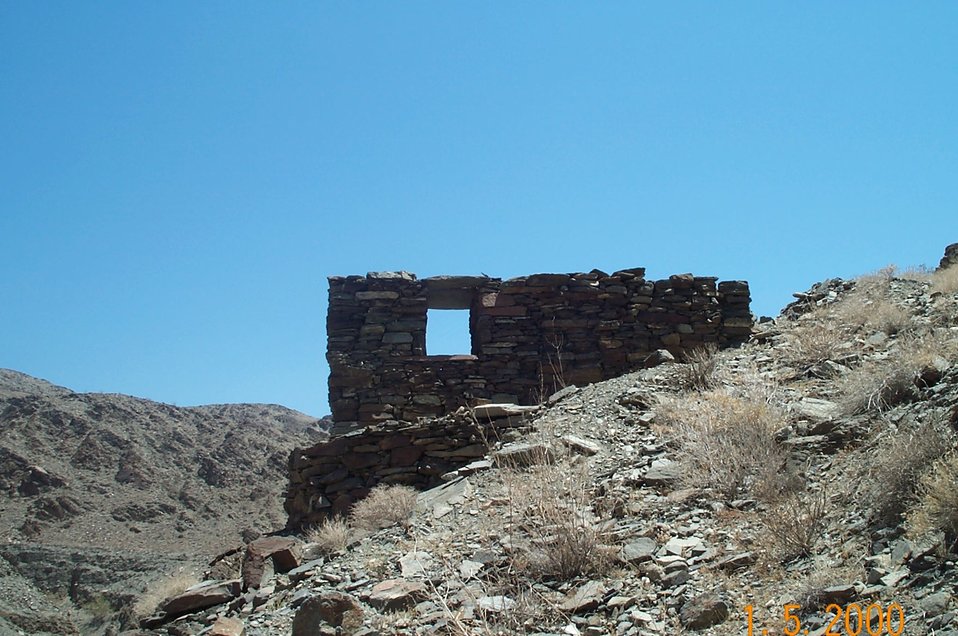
Old rock construction miner's cabin